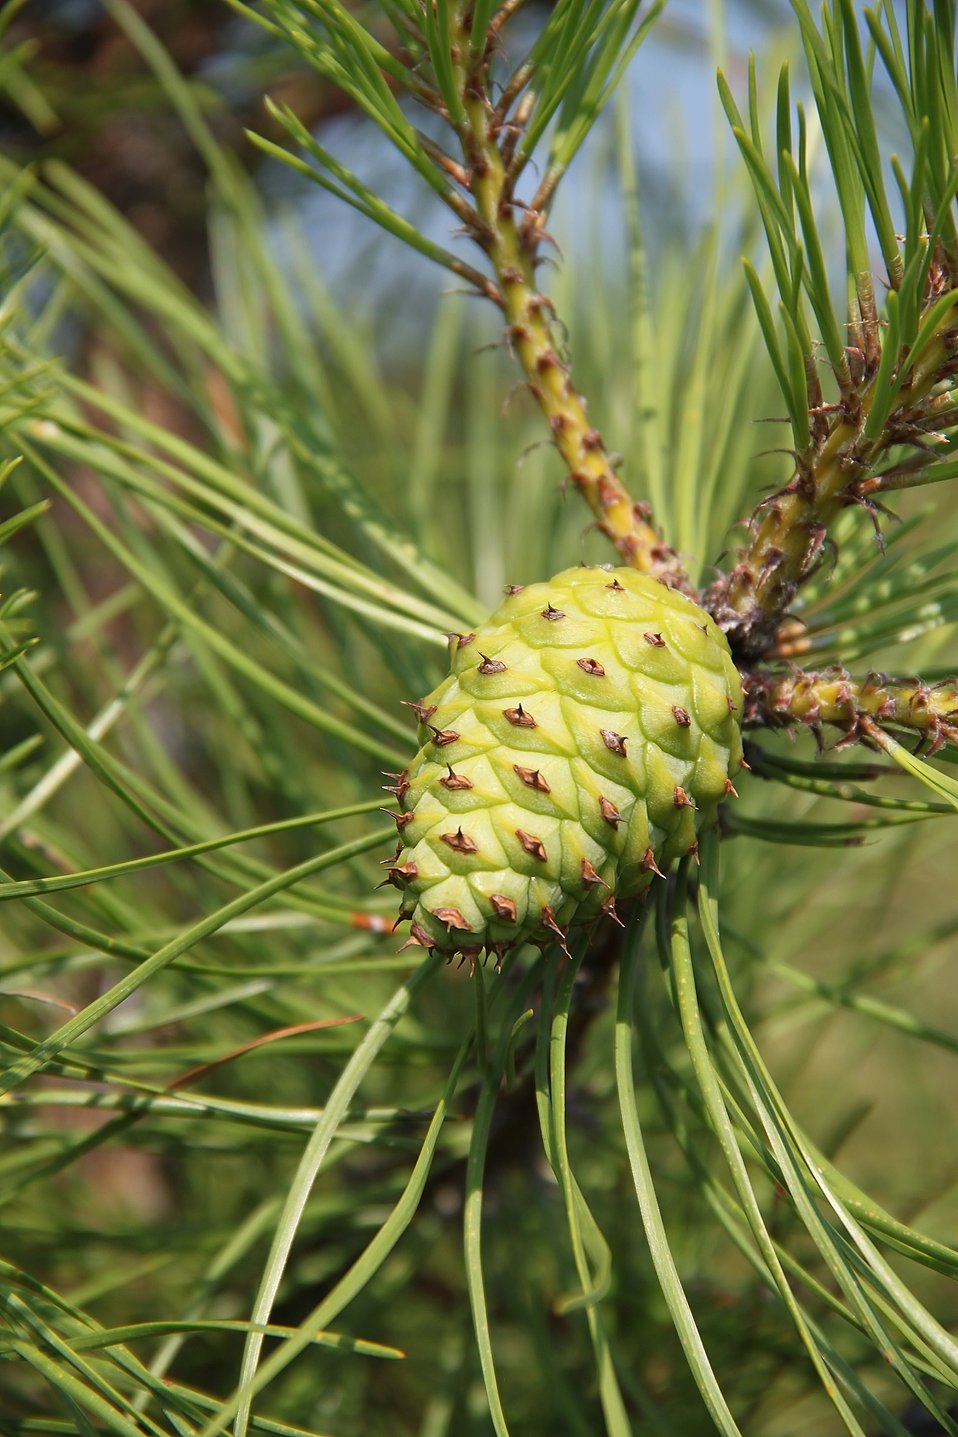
Pitch Pine

Photographed at Misisquoi National Wildlife Refuge.